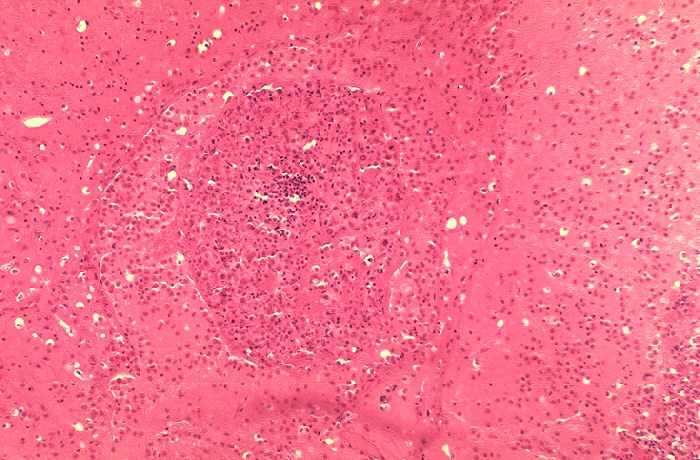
Histopathology of mediastinal lymph node in fatal human anthrax.